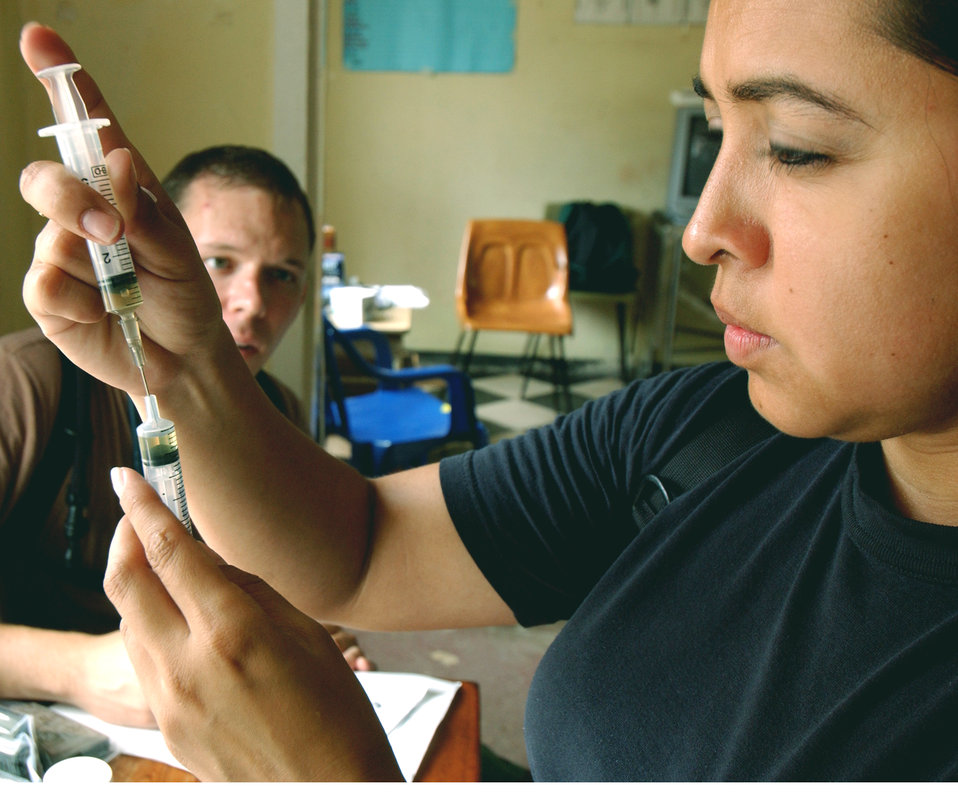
A little stick

ITHACA, Guyana -- Staff Sgt. Veronica Rios prepares a shot for a local boy with a serious skin infection. The free medical treatment was provided at Ithaca Hospital in support of exercise New Horizons 2004-Guyana here July 2. The joint service training is co-sponsored by the U.S. Southern Command in Miami, Fla., and the Guyana Defense Force. Sergeant Rios is assigned to the 7th Medical Squadron at Dyess Air Force Base, Texas.